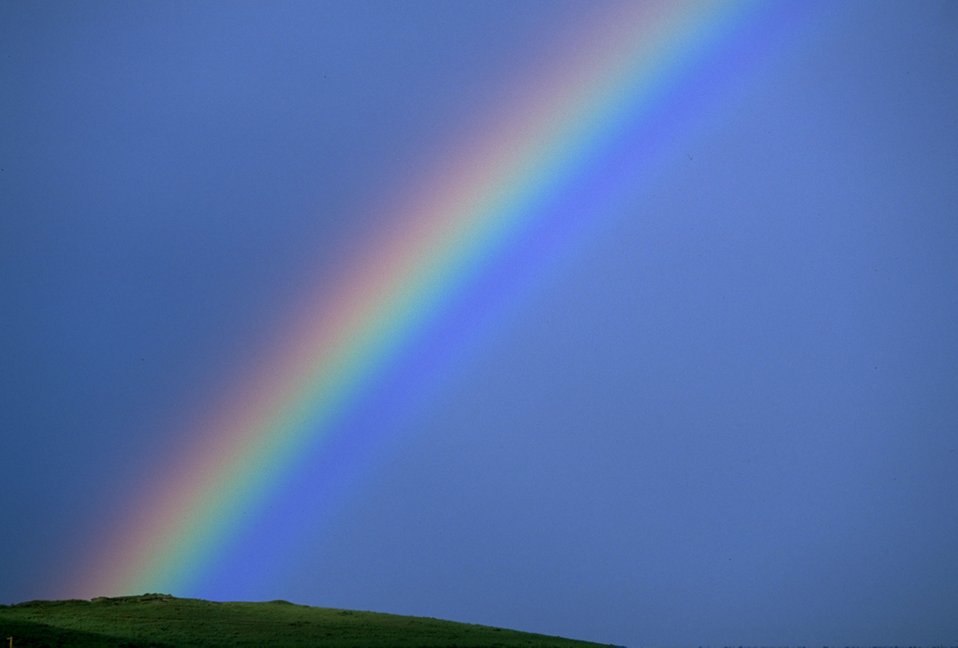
Beautiful rainbow